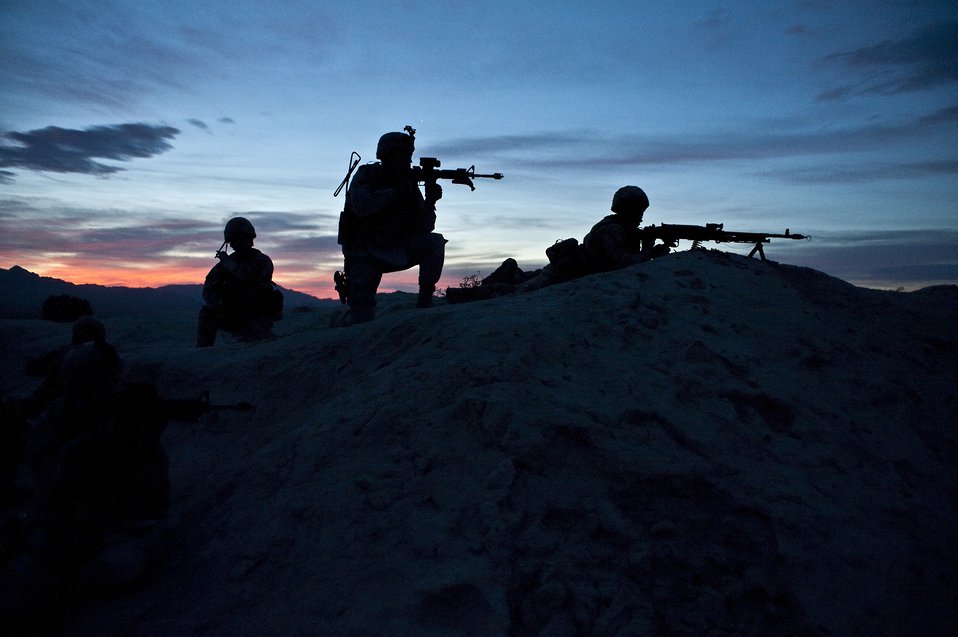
Working under cover

A group of U.S. and British airmen move into position to provide cover fire during a field training exercise March 16, 2011, as part of Desert Eagle on the Nevada Test and Training Range.